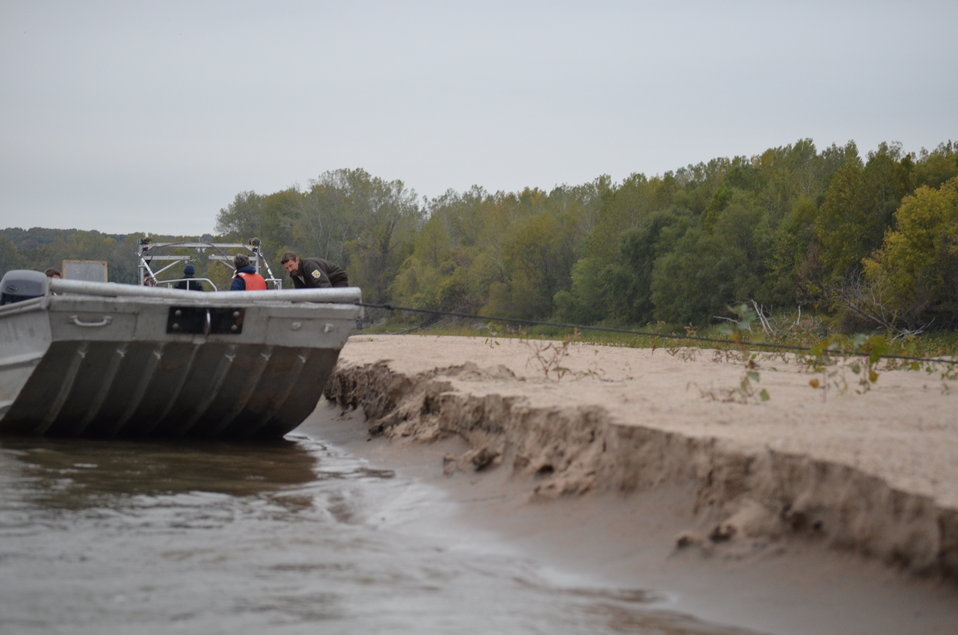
Resting at sandbar

USFWS boat resting by shore. USFWS/Ashley Spratt